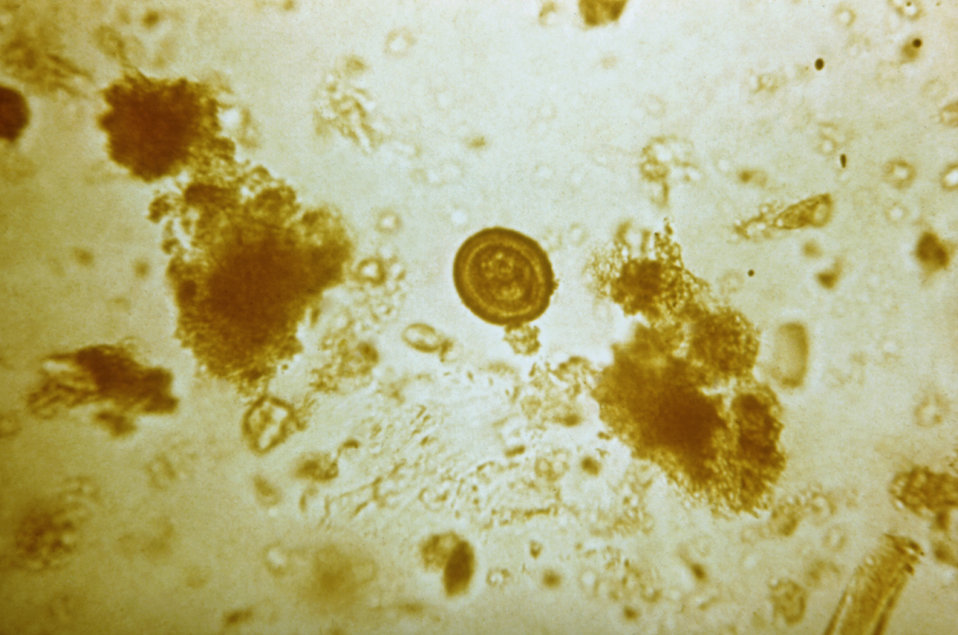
This micrograph depicts an egg from either a T. saginata, or T. solium cestode, i.e., tapeworm.